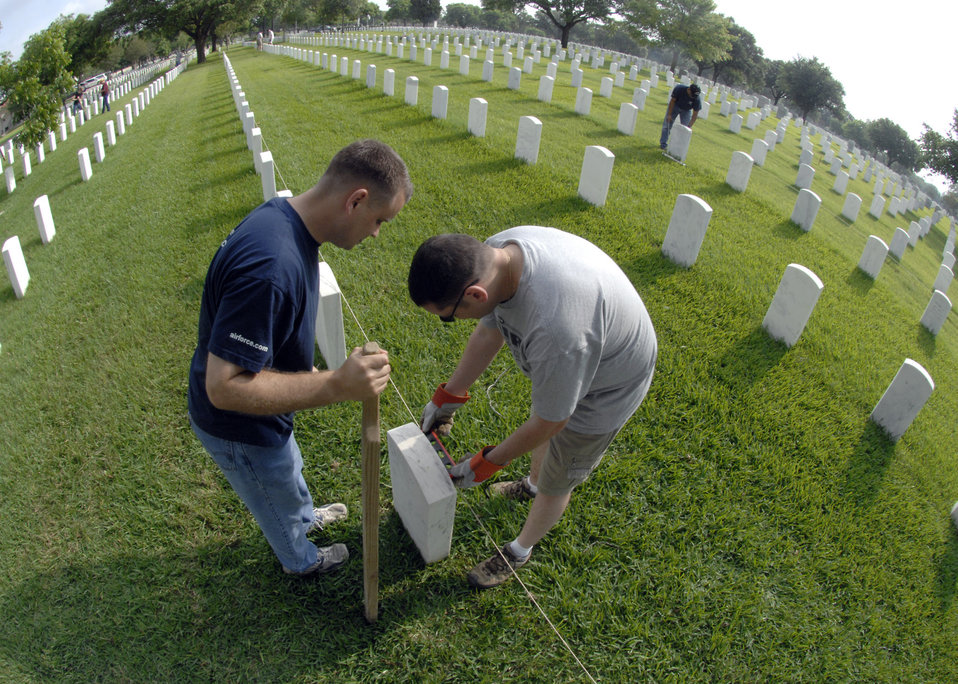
'Row on row?'

Tech. Sgts. Ryan Hoke (left) and Jason Litalien straighten headstones at the Fort Sam Houston National Cemetery in San Antonio to prepare the cemetery for funerals and for the upcoming Memorial Day weekend.